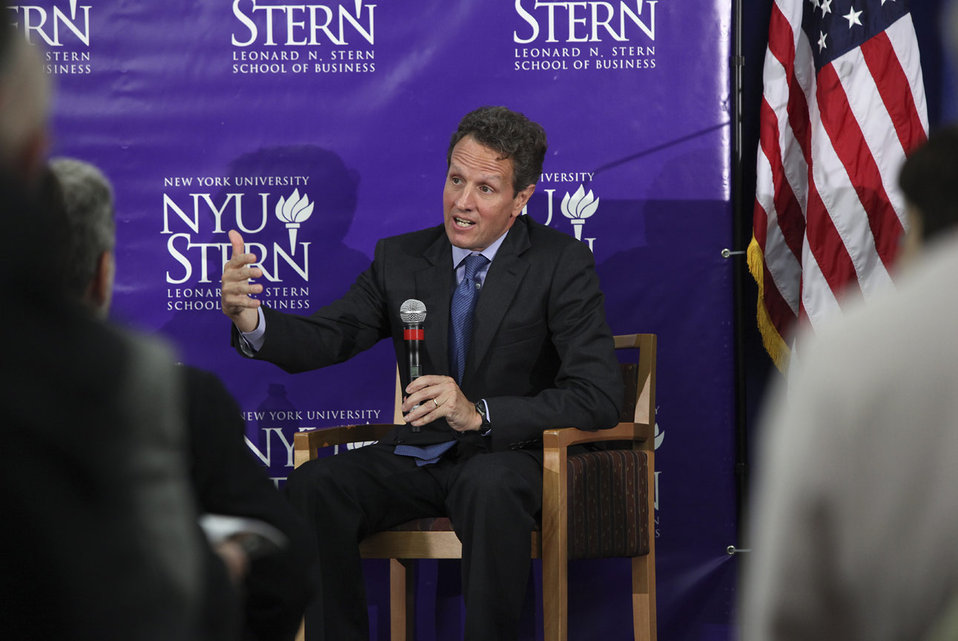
Secretary Geithner Delivers Remarks on Financial Reform at NYU, 8/2/2010

Following his speech on financial reform, Secretary Geithner participated in a Q&A with the audience.